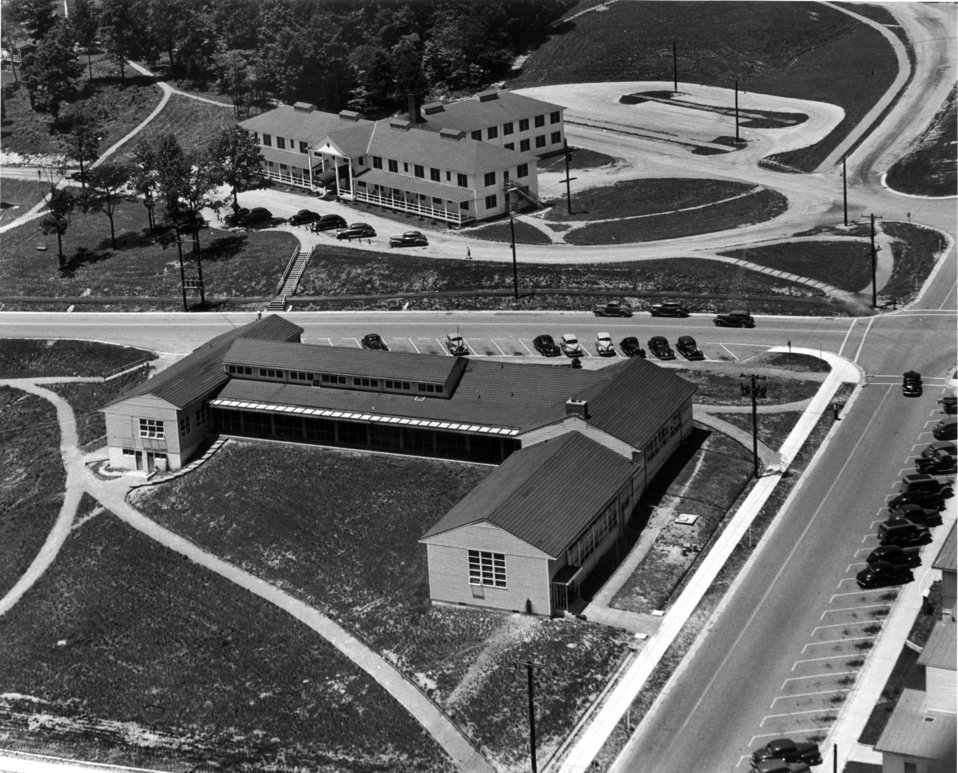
Guest House and Library Oak Ridge

3515 DOE photo by Ed WEstcott Oak Ridge Tennessee